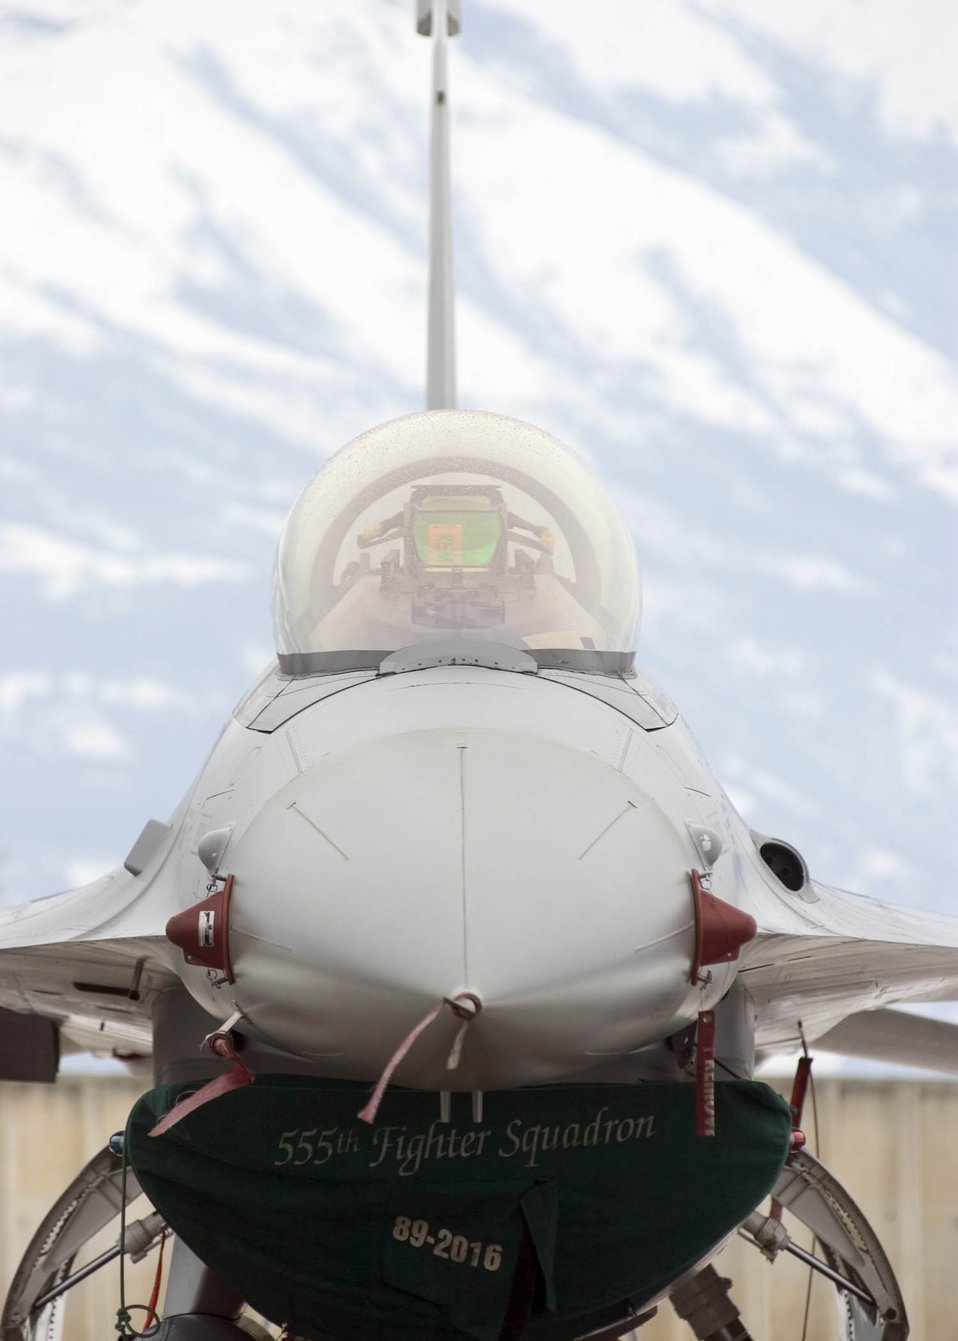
Frozen Falcons

AVIANO AIR BASE, Italy -- A F-16 Fighting Falcon sits on a very chilly ramp after nearly six inches of snow accumulated here Feb. 21. Other than on the Italian Alps, snow does not hang around long in Italy. The area averages less than four inches of snowfall annually; the last significant snowfall was in December 2001.